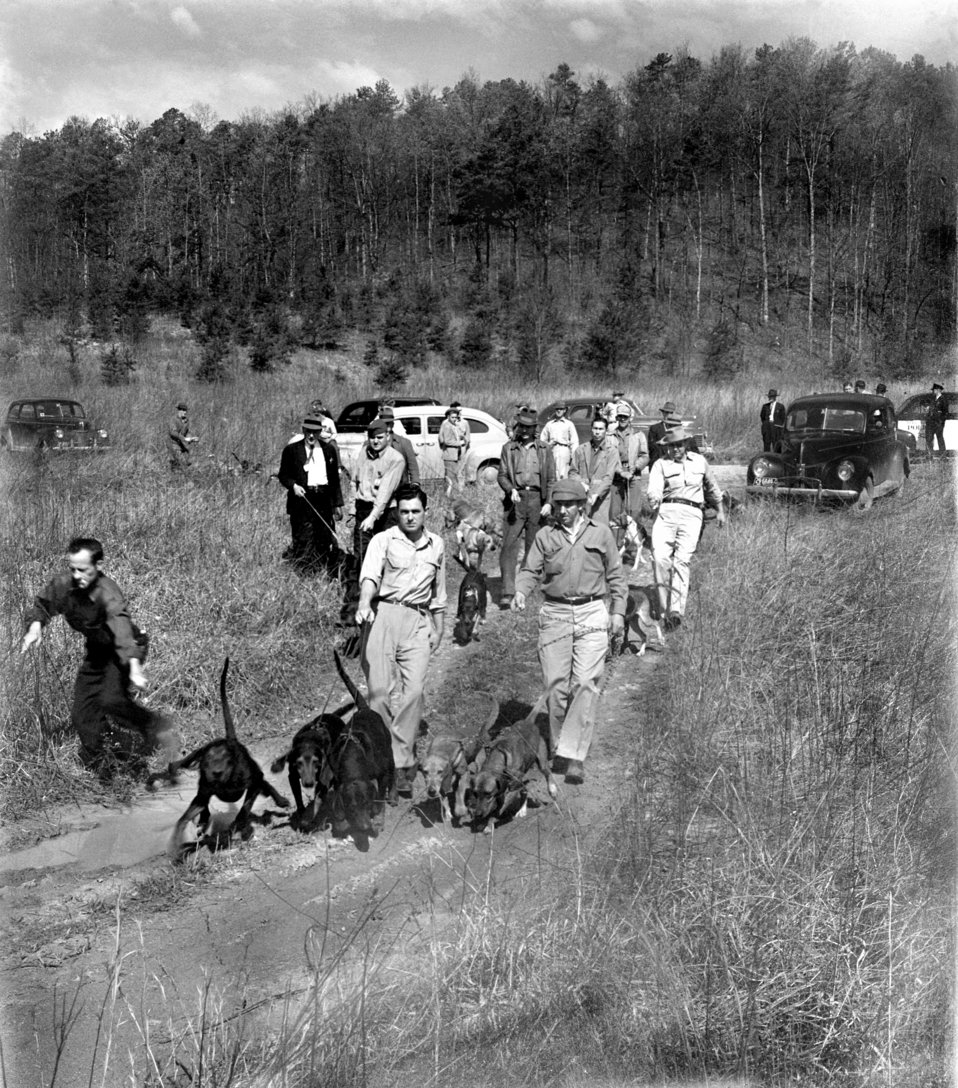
Coon Hunt (Raccoon Hunting) Oak Ridge 1947

3400-6a DOE photo Ed Westcott 4-12-1947 Oak Ridge Tennessee